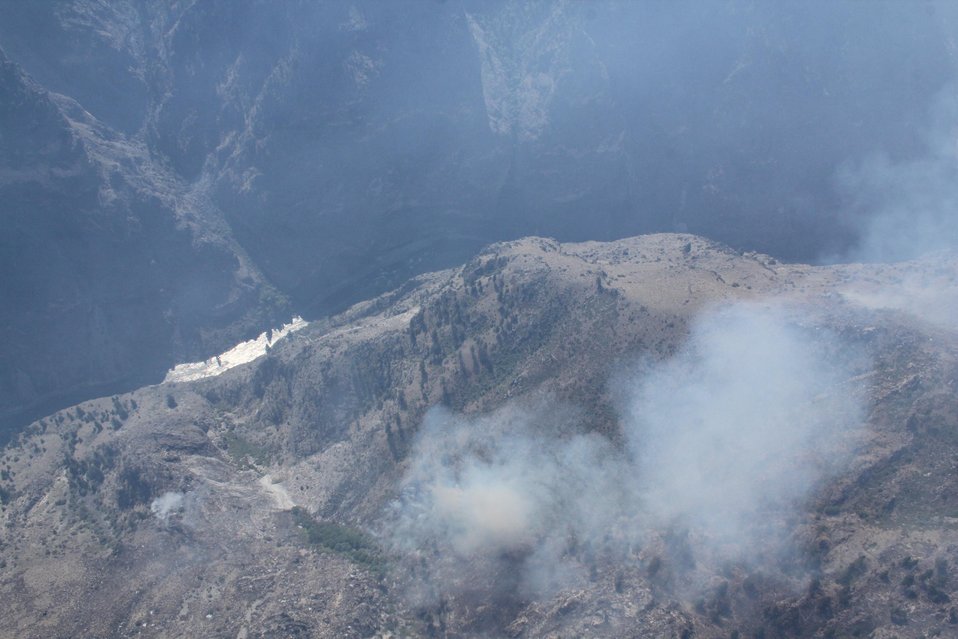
The Papoose Fire in the Salmon-Challis National Forest in Idaho began on Jul. 8, 2013 by lightning has consumed approximately 6, 504 acres.